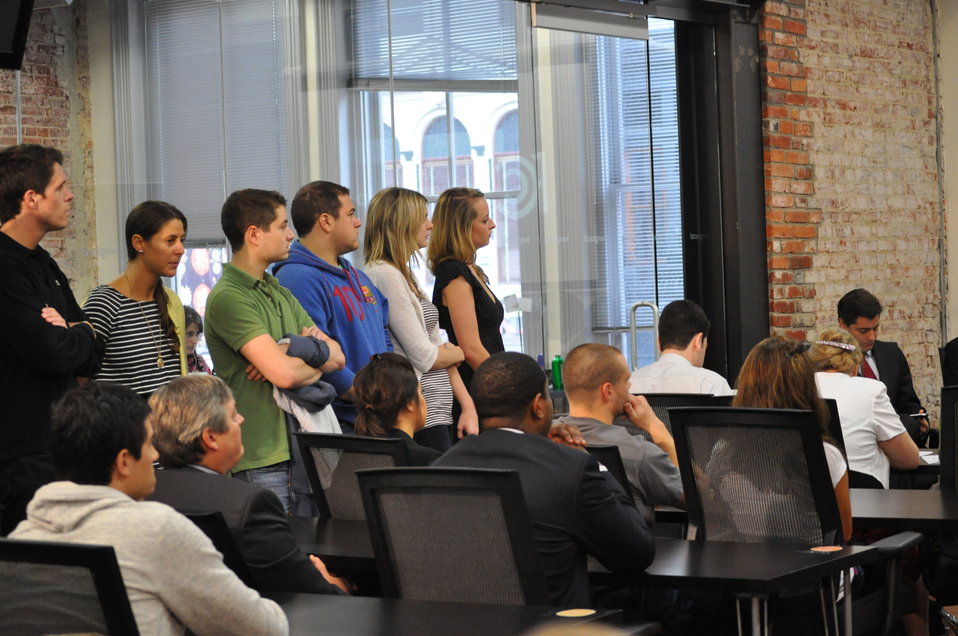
Jobs and the Broadband Economy

The crowd at the Broadband: a driving force for American job creation and economic growth event in DC.